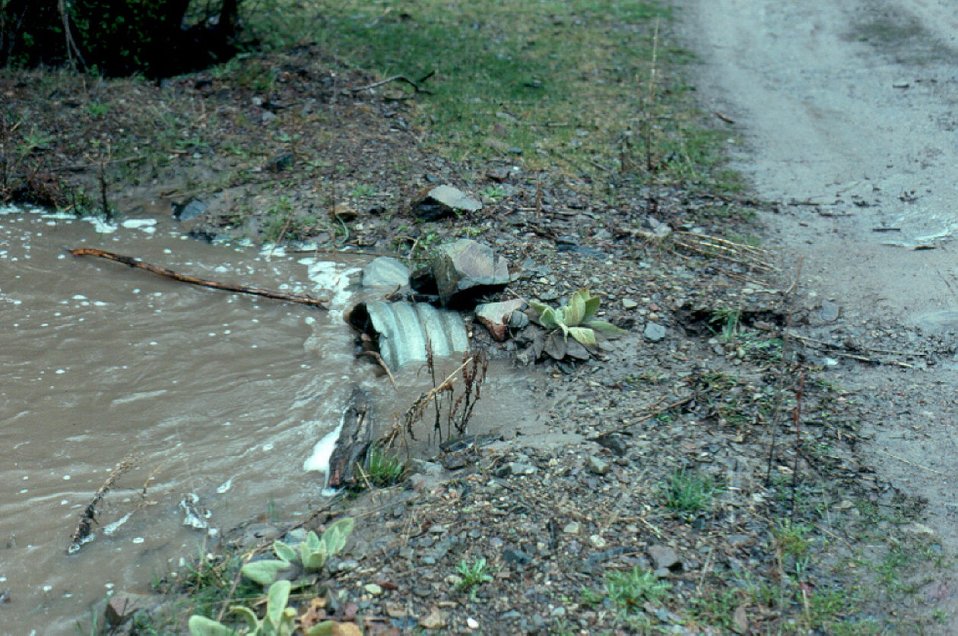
Roads Recreation Erosion Salmon Field Office UCSC Upper Columbia Salmon Clearwater District